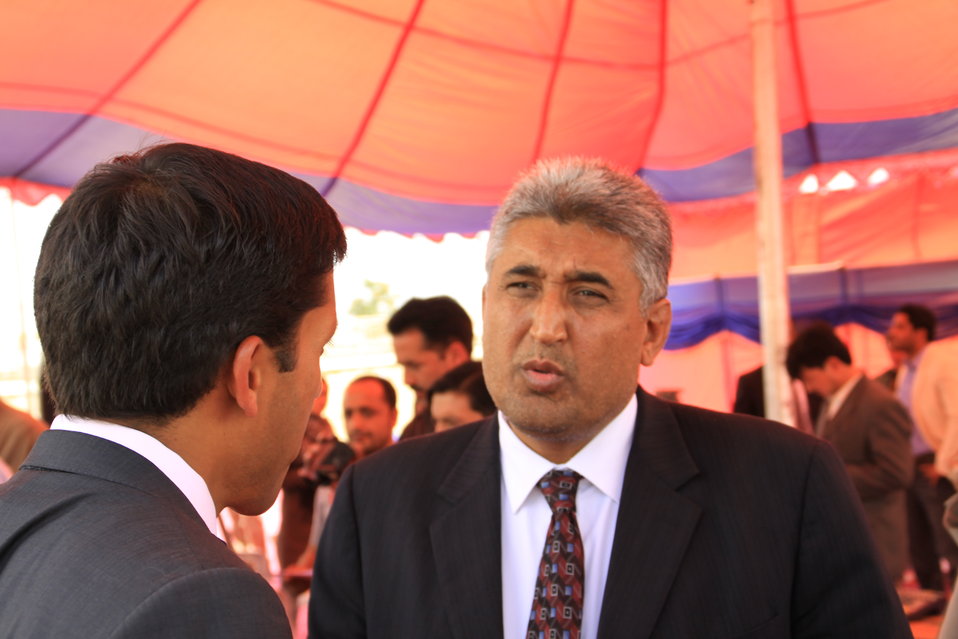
Badam Bagh Farm